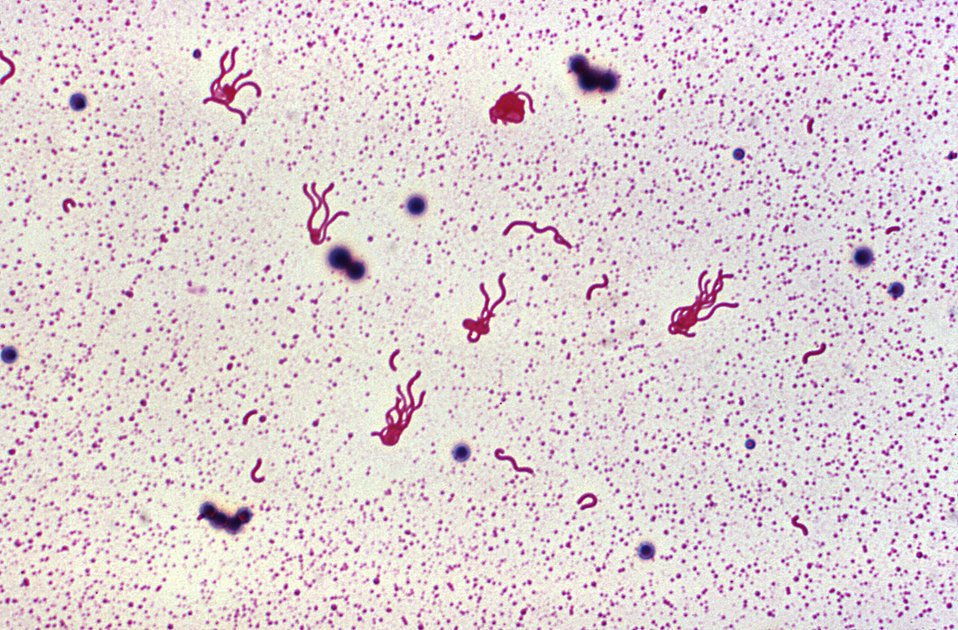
Bacillus circulans. Leifson flagella stain.